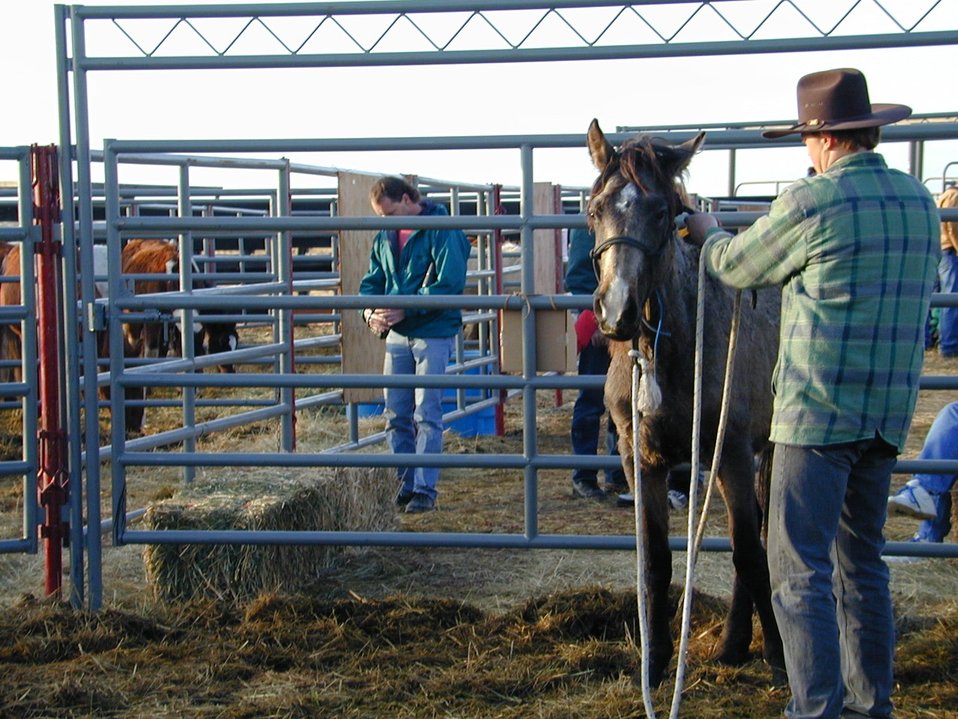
Wild Horse and Burro Adoption